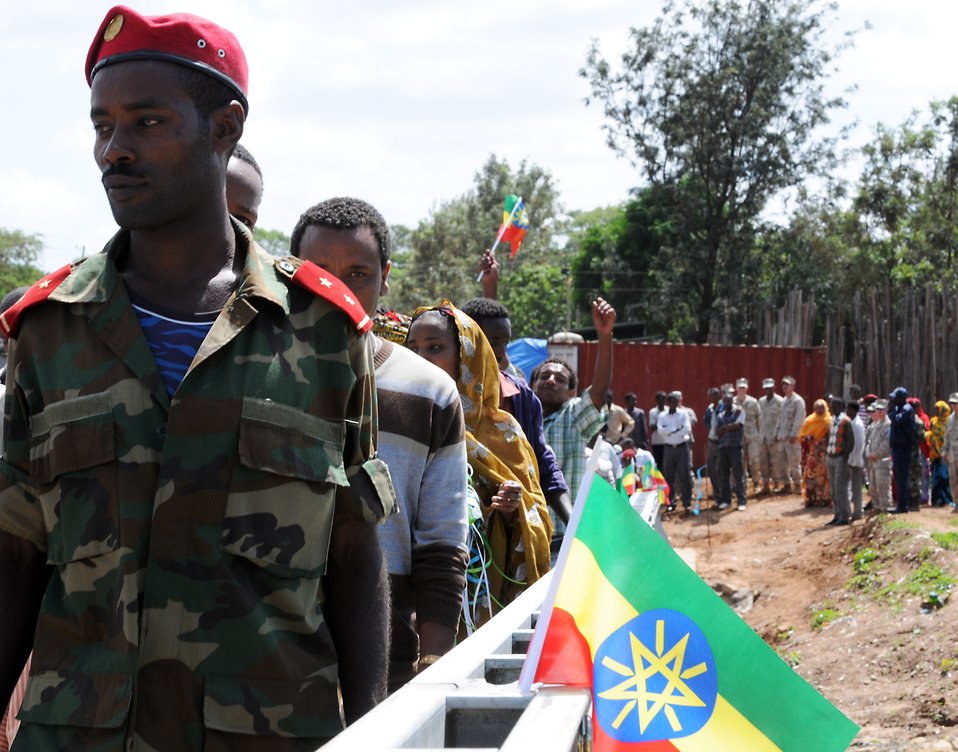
144 hours in Ethiopia: The Negele Borena Bridge

Residents of Negele Borena, Ethiopia, cross the Negele Borena Bridge for the first time since its official dedication Dec. 6, 2011. The 50-meter, steel-truss bridge was built to provide safe passage for pedestrians and livestock crossing the dangerous river below.